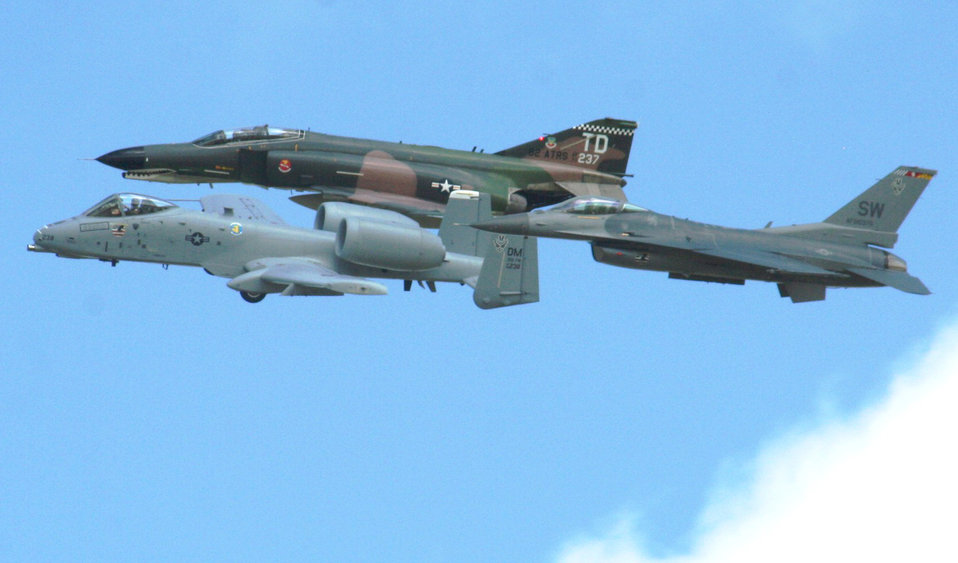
Scott AFB air show

An A-10 Thunderbolt II, F-16 Fighting Falcon and F-4 Phantom II perform a